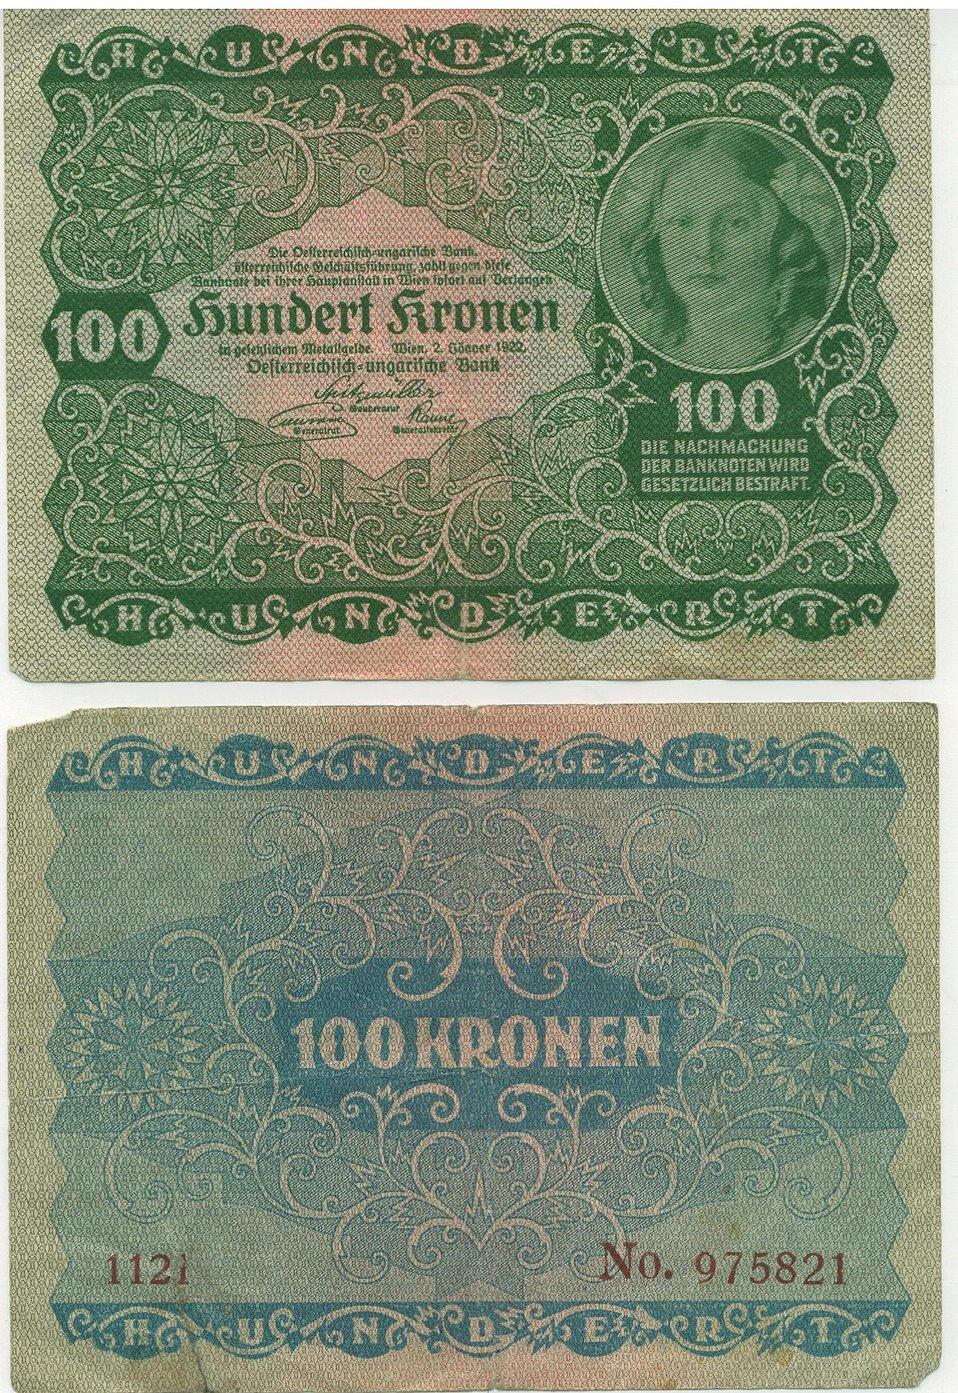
Austrian banknote 100 Kronen (1922) Deutsch: Österreichische Banknote von 1922 über 100 Kronen. - nicht mehr in Ungarn verwendbar.